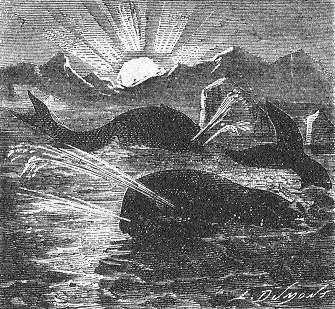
An illustration from Jules Verne's novel 'Journeys and Adventures of Captain Hatteras', part I: 'The English at the Noth Pole' drawn by Édouard Riou and/or Henri de Montaut. Polski: Ilustracja powieści Juliusza Verne'a 'Podróże i przygody kapitana Hatterasa', części I: 'Anglicy na Biegunie Północnym' autorstwa Édouarda Riou i/lub Henri de Montauta. Français : Jules Verne: 'Voyages et aventures du capitaine Hatteras - Les Anglais au Pôle Nord', Édouard Riou et Henri de Montaut.